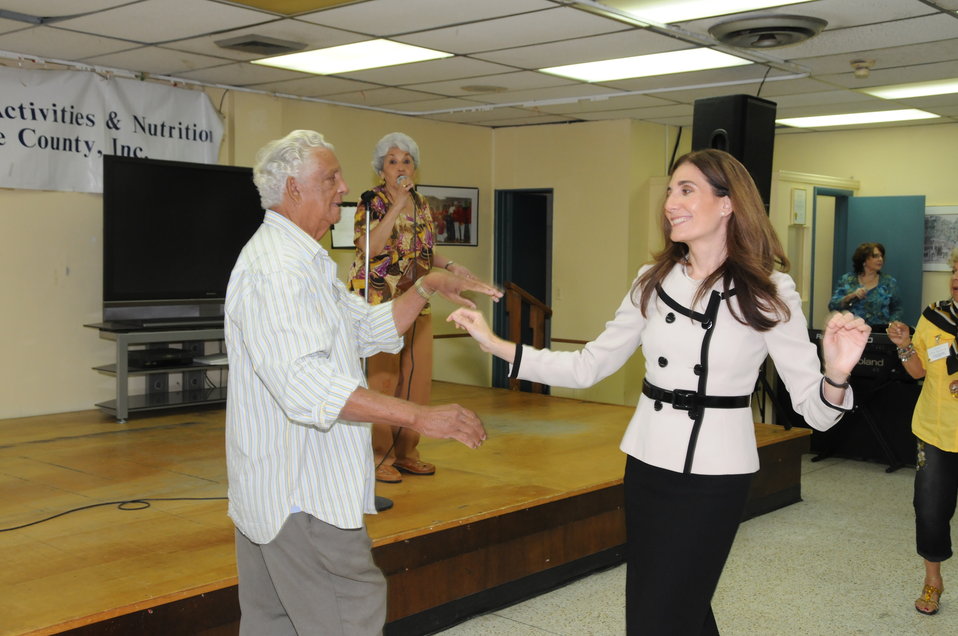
Deputy Administrator for SNAP Lisa Pino takes a break to dance with a senior citizen at the Little Havana Activities and Nutrition Center in Miami.